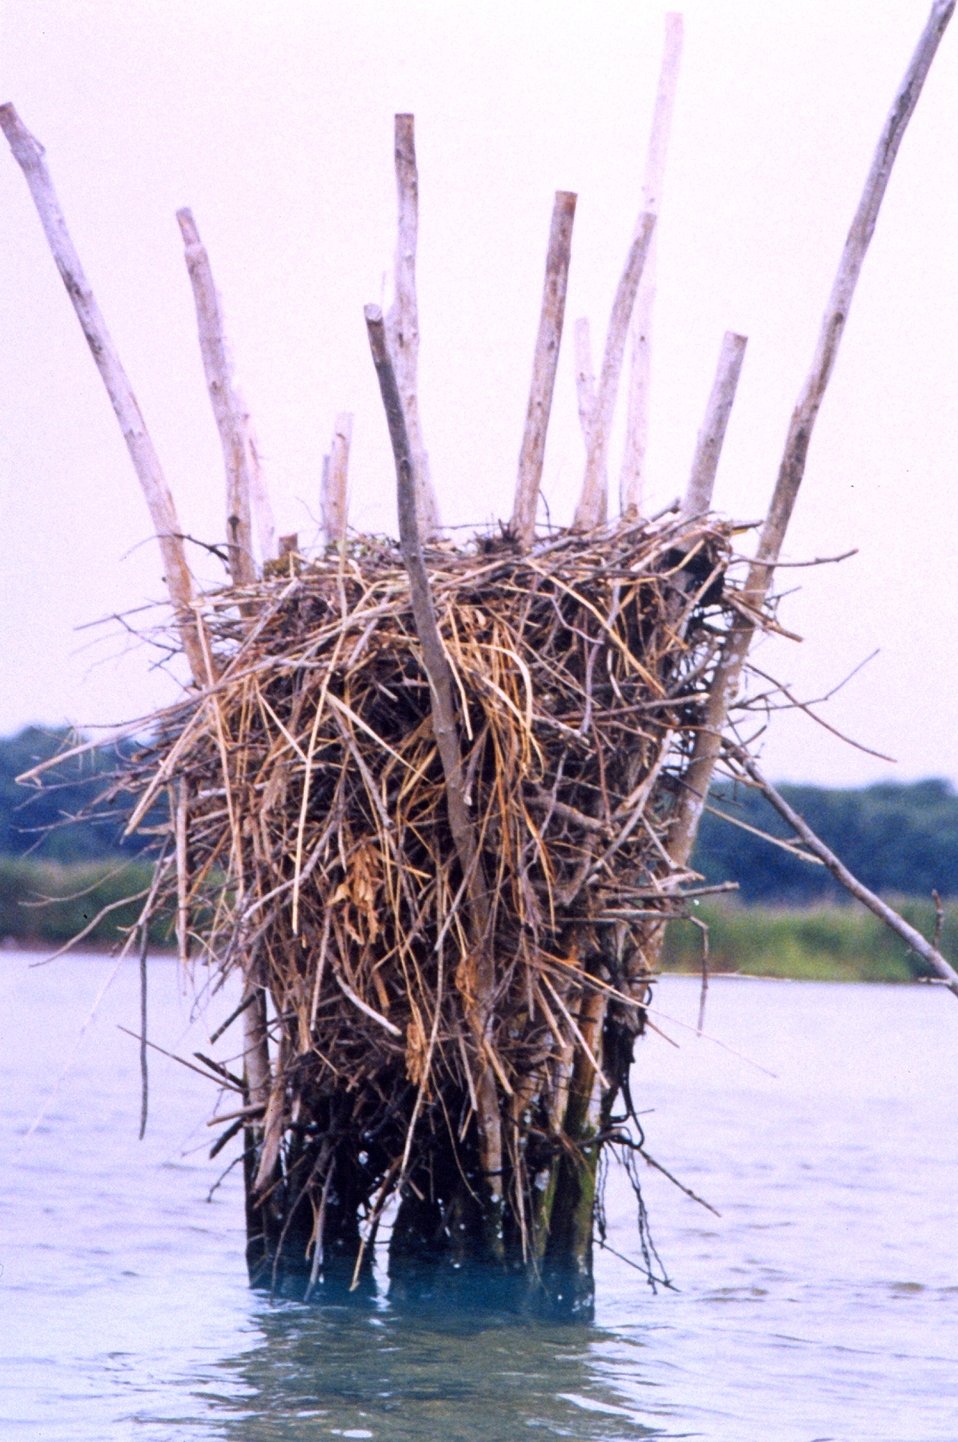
Closeup of an osprey nest built amid pound net posts.